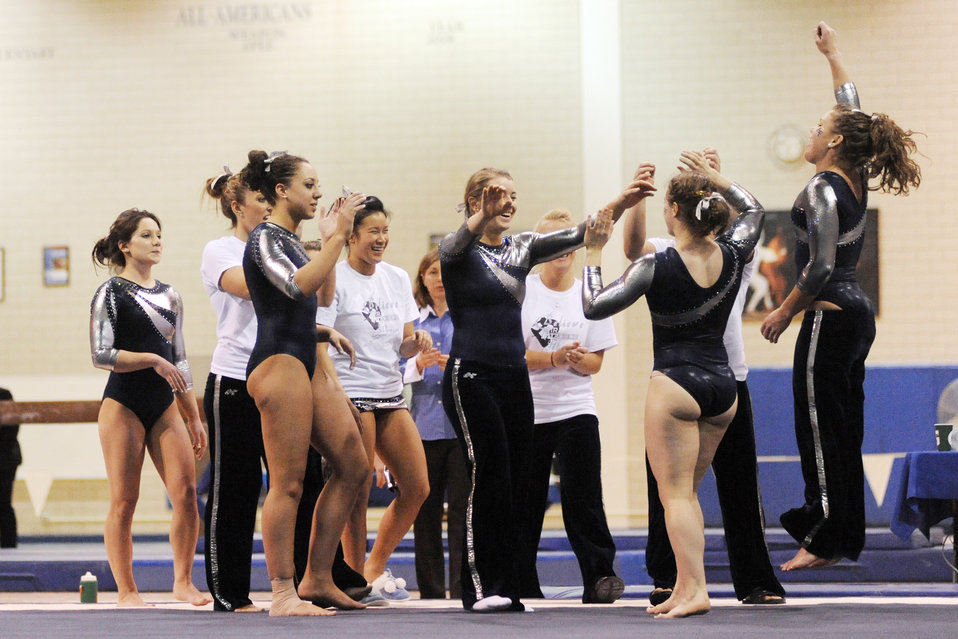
Women gymnasts compete in tri-meet

The Air Force Women's Gymnastics team celebrates after sophomore Jenna Dudley's performance in the floor exercise during the tri-meet in the U.S. Air Force Academy's Cadet Gym Feb. 20, 2010. Dudley placed fifth in floor exercise with a score of 9.750.